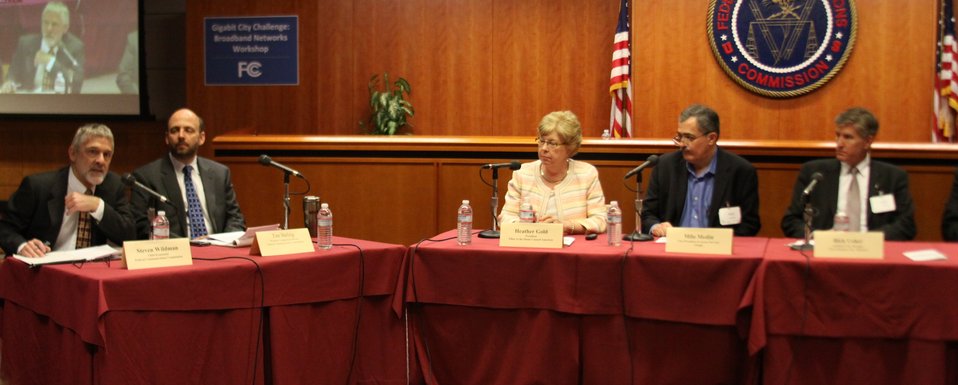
March 27, 2013 Gigabit City Challenge: Broadband Networks Workshop Panel 4: Leveraging Local Tools